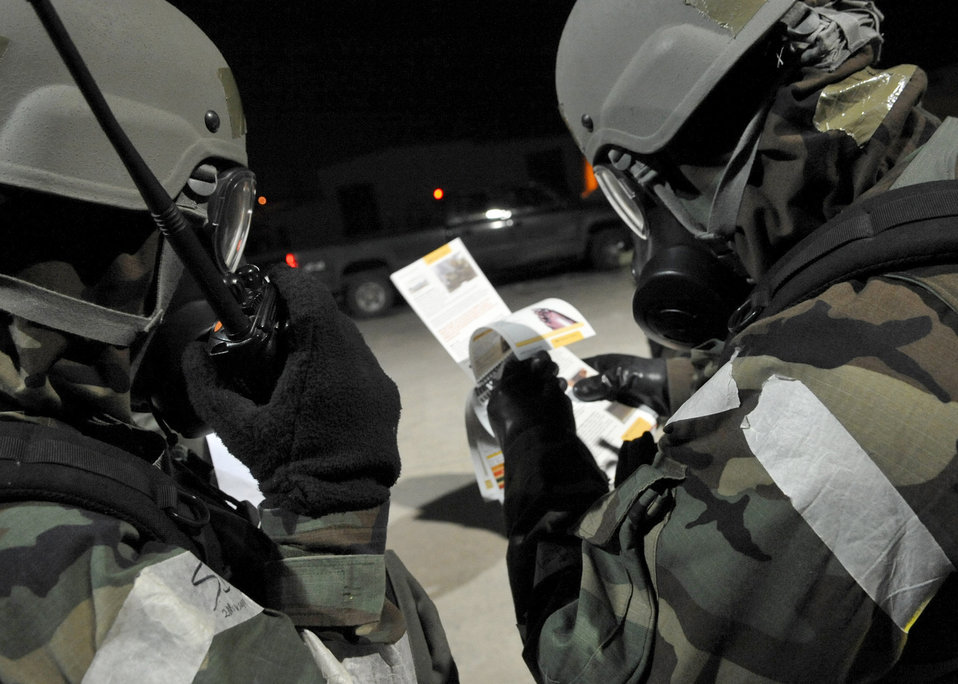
Beverly Bulldog 11-01

Airmen read instructions while conducting a post-attack reconnaissance sweep Jan. 28, 2011, at Osan Air Base, South Korea, as part of Beverly Bulldog 11-01, an operational readiness exercise. Post-attack reconnaissance sweeps are conducted after an attack to survey the area for contamination, unidentified explosive ordnance, casualties or suspicious activity.